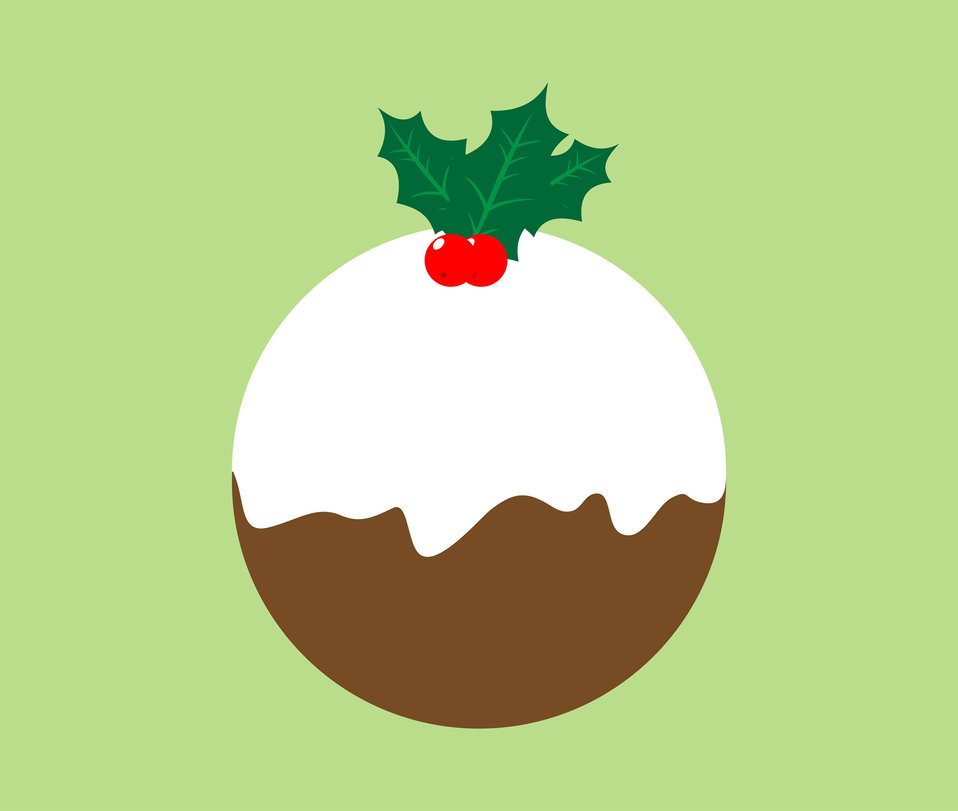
Christmas pudding clipart for scrapbooking.